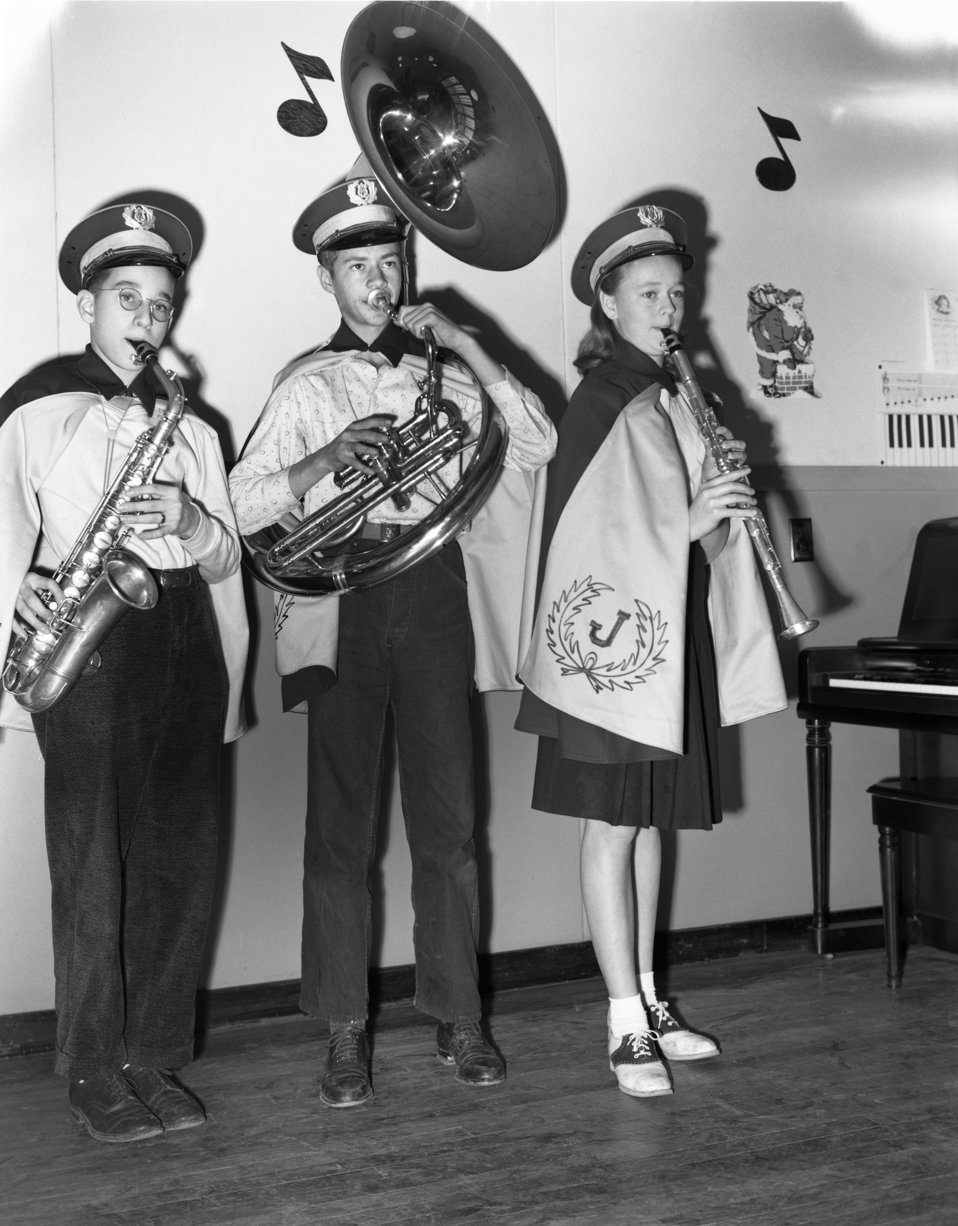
Jefferson Jr. High Band Oak Ridge 1947

4076 DOE photo Helen Bean 12-11-1947 L to R John Batch, John Boling, and Glenna McCurry Oak Ridge Tennessee